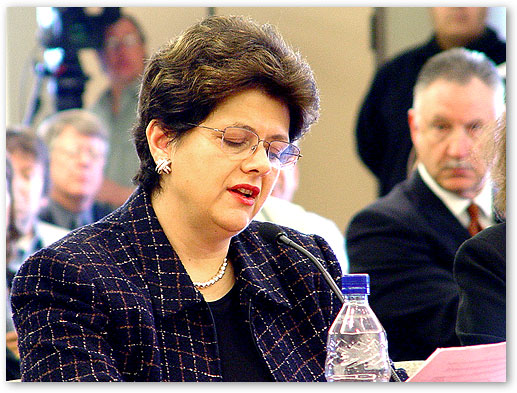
Media Bureau Chief, Ms. Donna Gregg, testifying at FCC Open Commission Meeting, Keller, Texas.